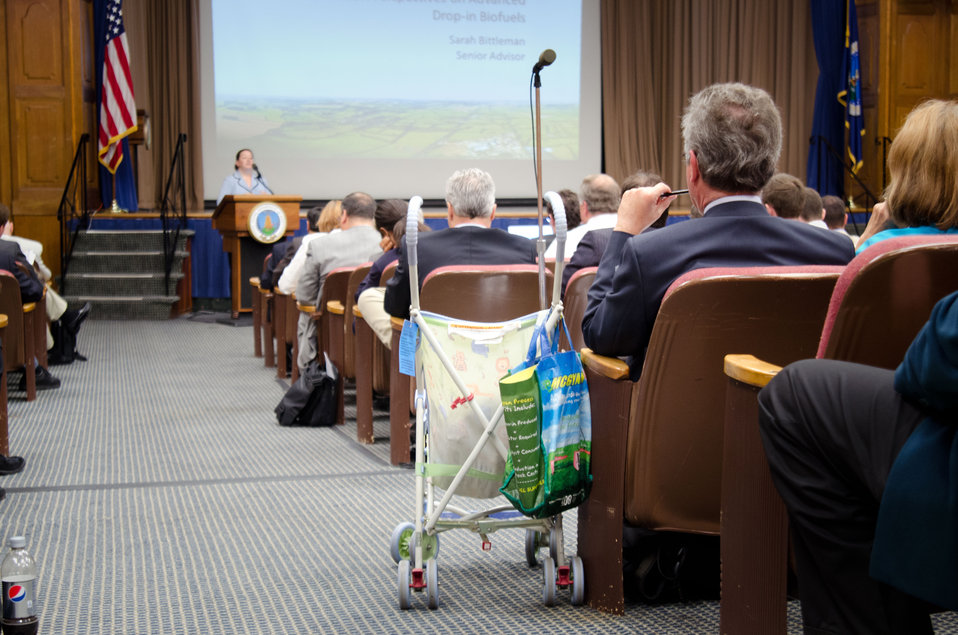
Senior Advisor to the Secretary of Agriculture Sarah Bittleman talked about the Agriculture perspectives on advanced drop-in biofuels, at the Industry Roundtable held in the Jefferson Auditorium, U.S.Department of Agriculture Headquarters in Washington, D.C., on Friday, May 18, 2012. Her talk discussed which feedstocks the USDA sees as coming advanced drop-in biofuels industry, what a transition from a food to a non-food related feedstock looks like and when/if they are required, and a detailed overview of the Commodity Credit Corporation (CCC) programs.